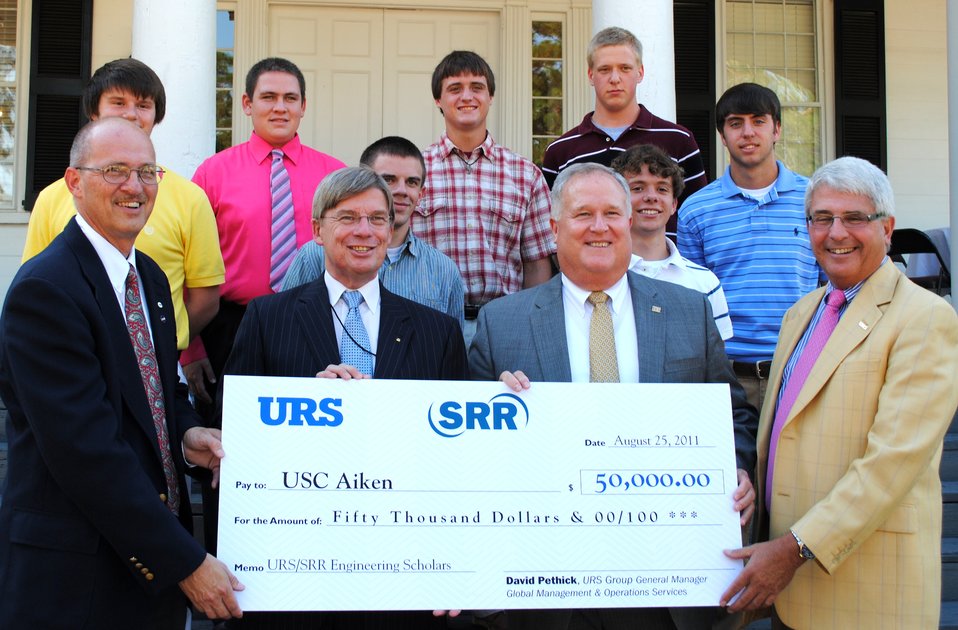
URS/SRR Engineering Scholars Named

Seven high school students have been named the first URS/SRR Engineering Scholars as part of a new program at the University of South Carolina Aiken.

The first students named recipients are as follows: Ryan Ward of Irmo High School; Jason Barber of South Aiken High; Lewis Arthur of Midland Valley High; Colt Everatt of South Aiken High; Matthew Harvey of Wagener-Salley High School; Keith Smith of Midland Valley High School; and Jordan Justus of Swansea High School.

The program will provide $2,500 renewable scholarships each year for academically talented students who have declared engineering as entering freshman.